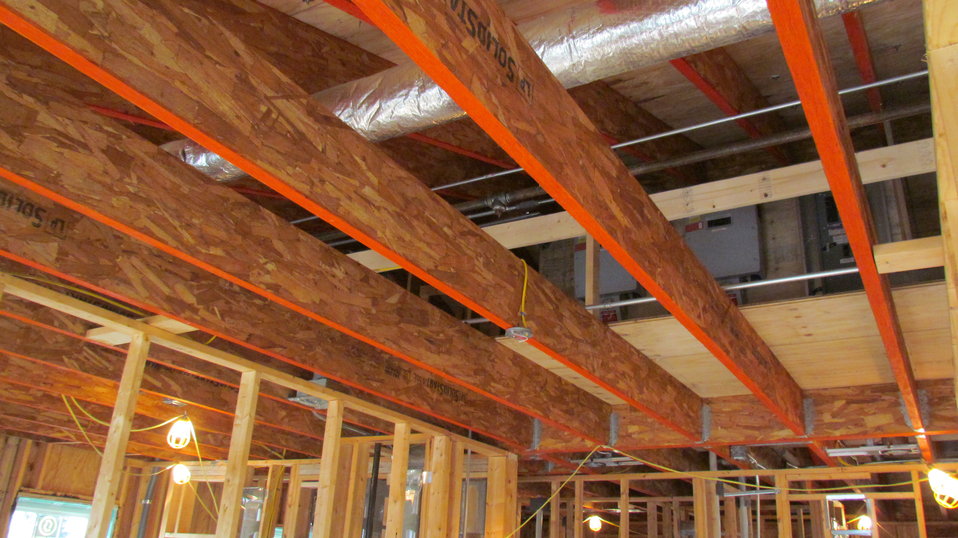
Picture taken from second floor looking up into attic. Gray boxes are inverters that convert the DC current produced by the photovoltaic panels into 240 volt AC current. The inverters also ensure that the photovoltaic panels are operated at their maximum power point.